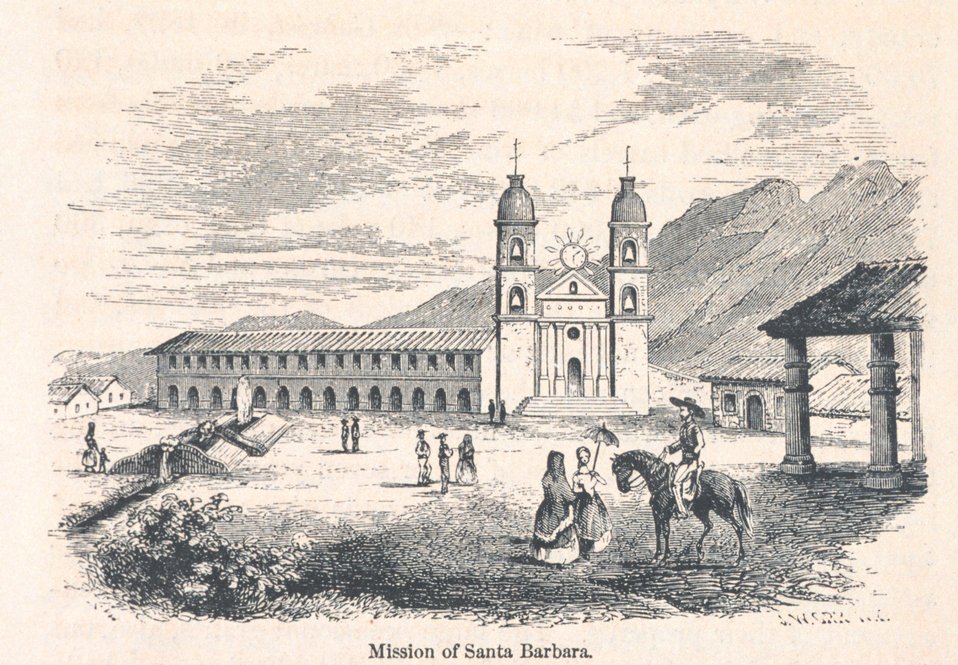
View of the Mission at Santa Barbara. In: 'The Annals of San Francisco'. Frank Soule, John Gihon, and James Nesbit. 1855. Page 65. D. Appleton & Company, New York. F869.S3.S7 1855.